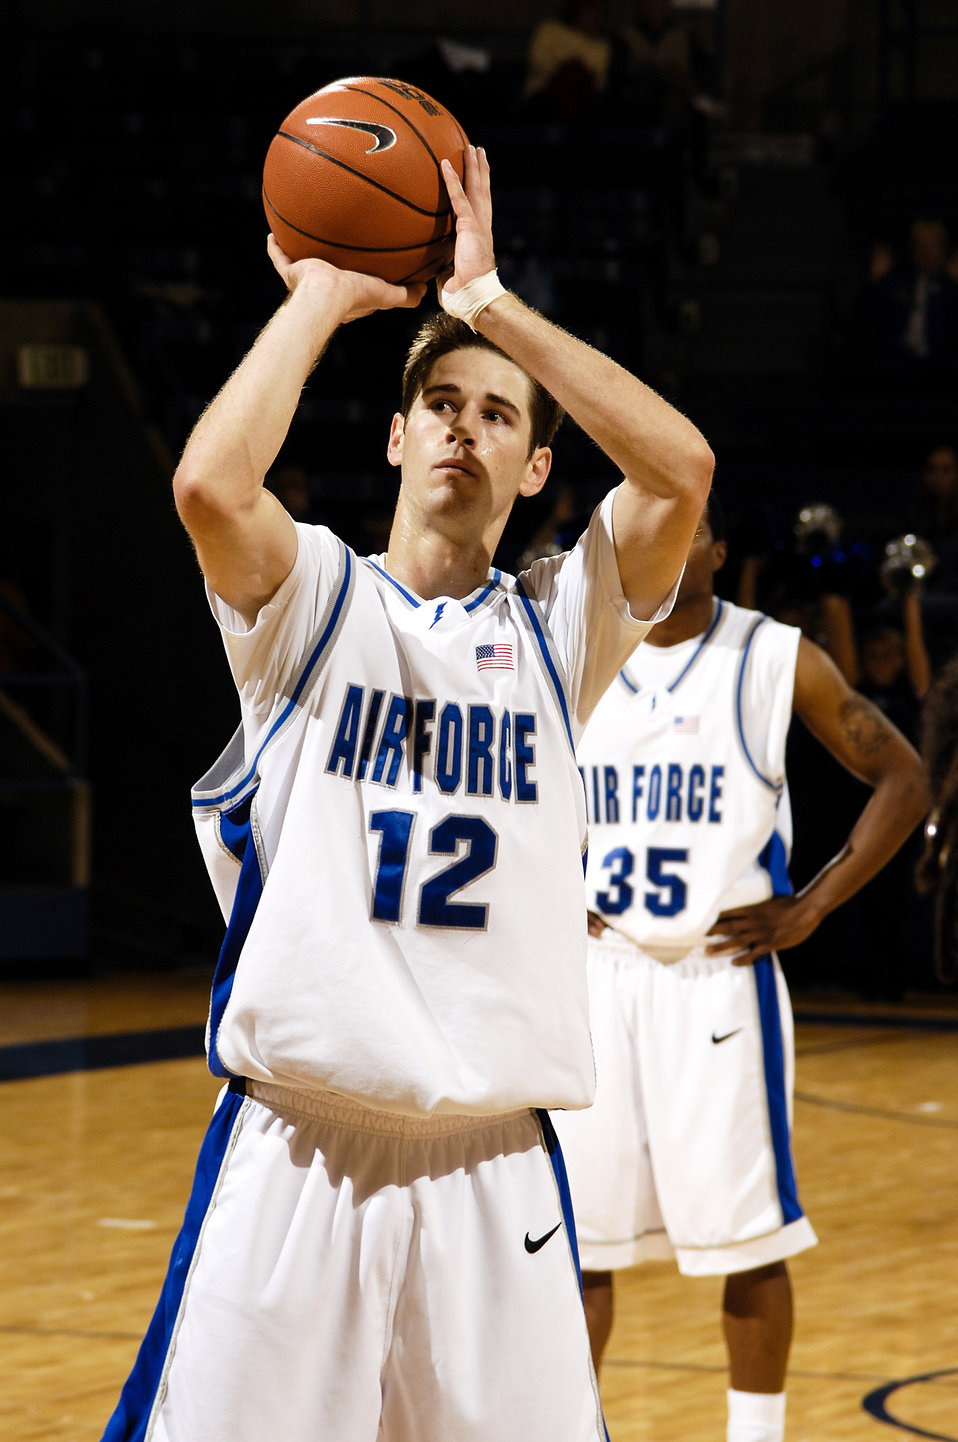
Air Force falls to Brock University, 66-63, in exhibition men's basketball

Senior Tim Anderson shoots from the foul line during the Brock University exhibition basketball game held at Clune Arena. Anderson's 25 points were not enough as Air Force was defeated 66-63. The Falcons open the 2007-08 regular season on Nov. 9 in the Air Force Classic at Clune Arena.